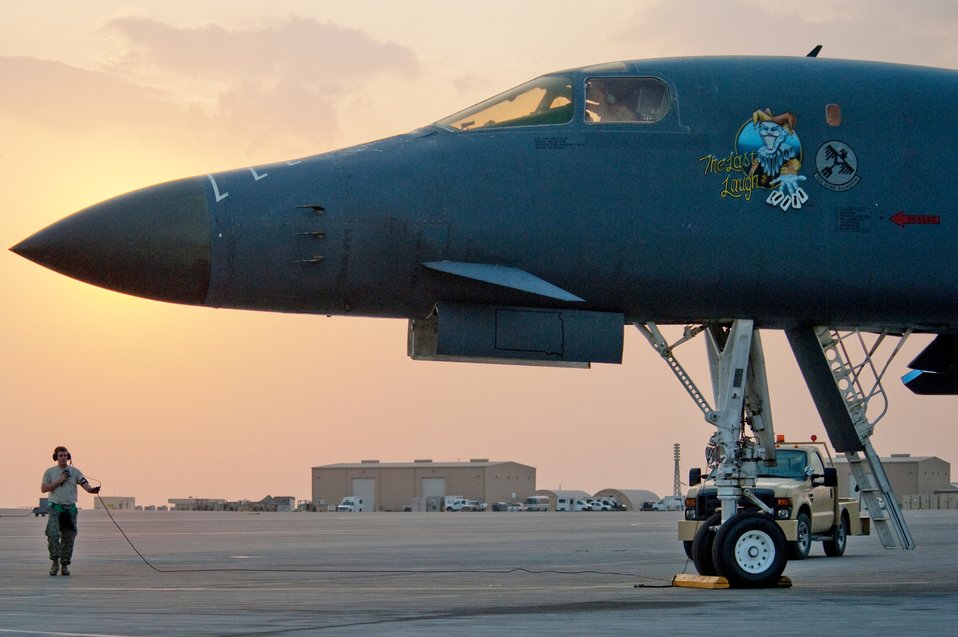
Checking out the B-1B for combat

Tech. Sgt. Shaun Carroll performs preflight checks on a B-1B Lancer Nov. 11, 2009, in Southwest Asia. Sergeant Carroll is with the 37th Aircraft Maintenance Unit and deployed with the aircraft from Ellsworth Air Force Base, S.D.